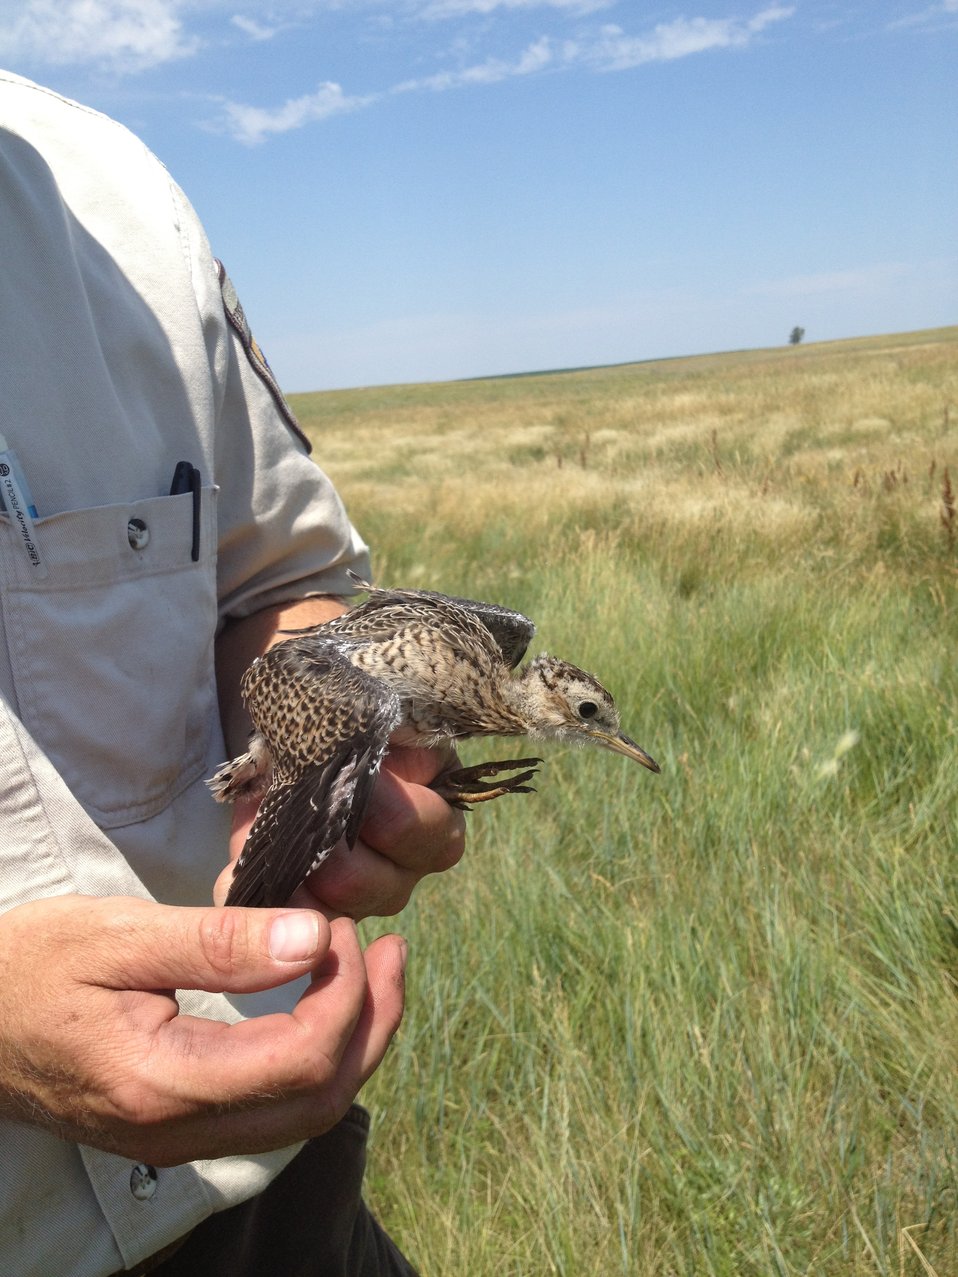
Baby Upland Sandpiper